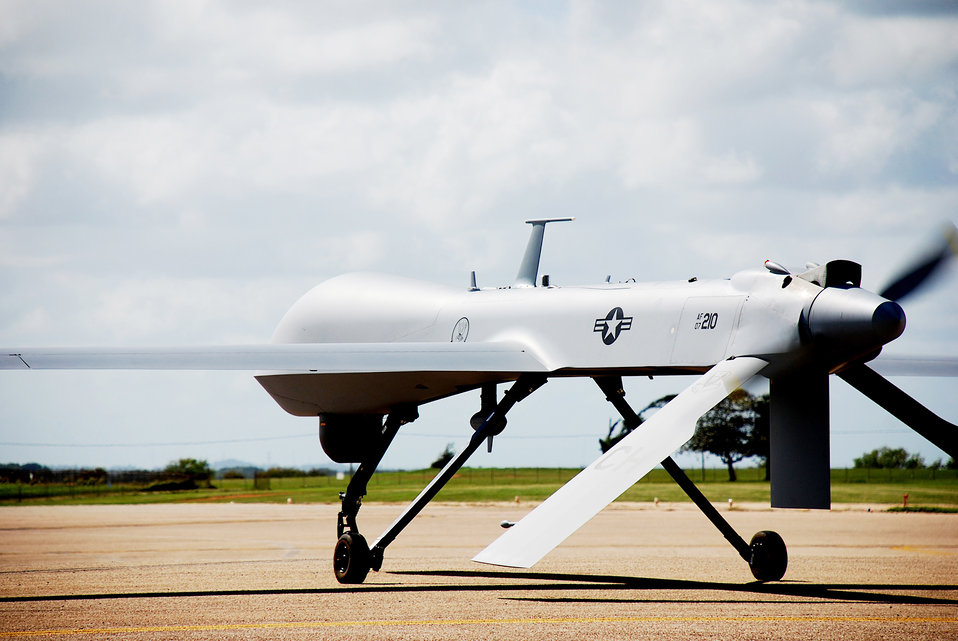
Haiti Earthquake Relief

An RQ-1 Predator prepares for takeoff at Aeropuerto Rafael Hernandez Jan. 27, 2010, outside Aguadilla, Puerto Rico. The remotely piloted aircraft are operating out of Puerto Rico in support of Operation Unified Response in Haiti. Airmen from Creech Air Force Base, Nev., are providing 24-hour-a-day full-motion video in real-time to international relief workers on the ground in order to speed humanitarian aid to remote and cut-off areas of the country following the earthquake Jan. 12, 2010.